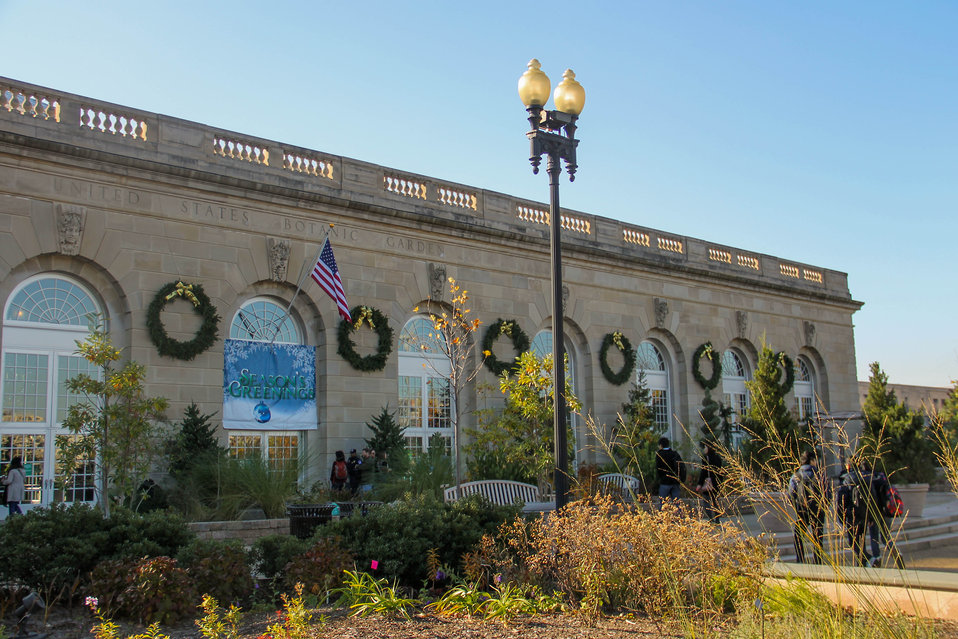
Season's Greenings at the U.S. Botanic Garden